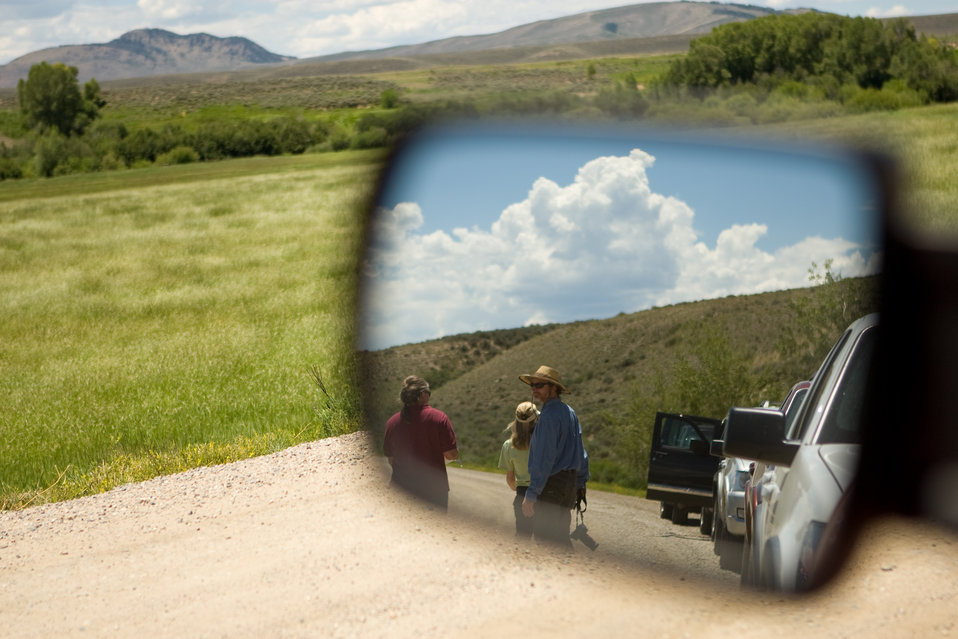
Colorado Rare Plant Conservation Initiative

The Colorado Rare Plant Conservation Initiative (RPCI) is a partnership of 23 statewide and regional agencies, private organizations, and academic institutions working to conserve 121 rare plants in Colorado. As part of these efforts the group developed the Colorado Rare Plant Conservation Strategy, developed Best Management Practices to reduce energy development impacts, addressed climate change, and developed focused strategies for the conservation of individual species at eight priority landscapes. The group has also worked to coordinate volunteer efforts for plant conservation across the state.